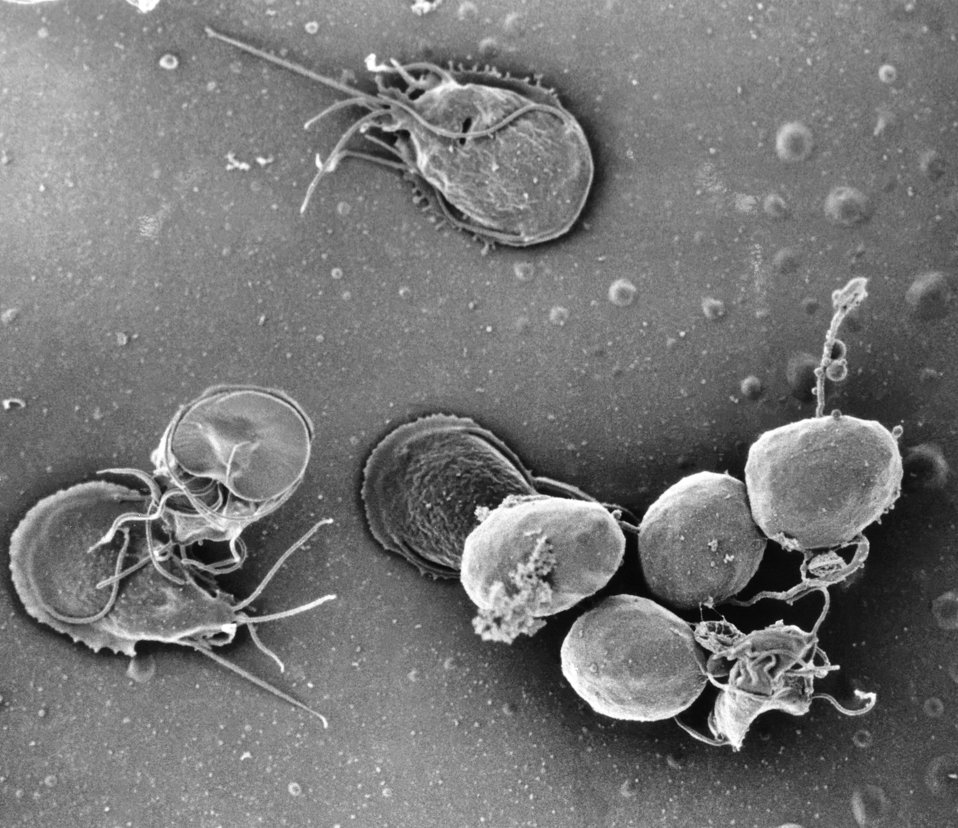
This is a scanning electron micrograph (SEM) of an in vitro Giardia lamblia culture, which had been cultivated in bile-free TYI-S-33 medium for 48 hrs, then incubated 24 hrs with 10 mg/ml bovine bile in order to stimulate cyst formation. This photograph contains both trophozoites, and a cluster of maturing cysts (bottom right). At far left, the two trophozoite-staged organisms are positionally situated opposite to one another, with the farthest left G. lamblia displaying its dorsal, or upper surface, and the protozoan to its immediate right, its ventral, or bottom surface.